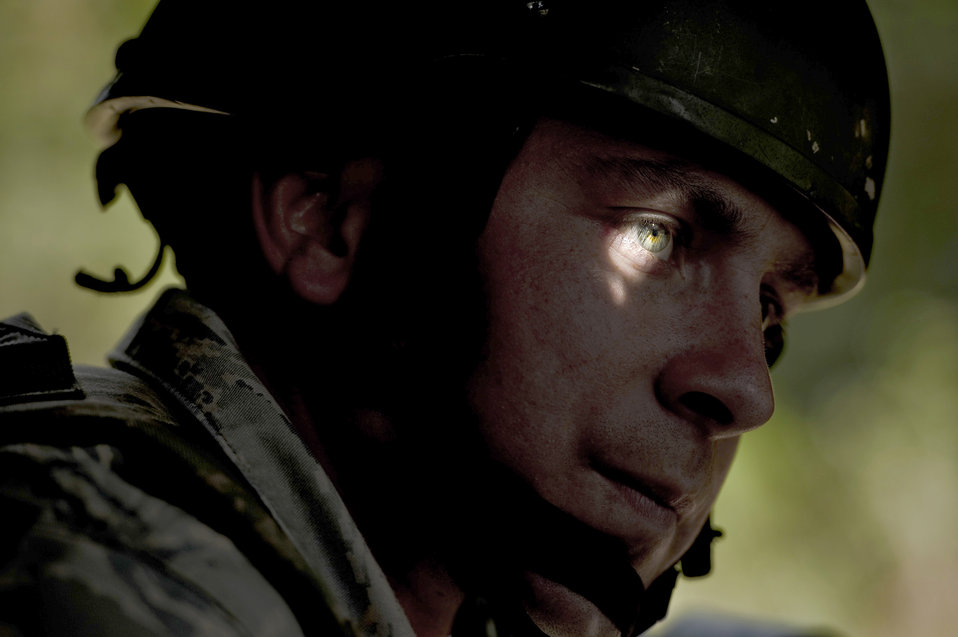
Keeping an eye on the road

Senior Airman Daniel Horning rides in the lead Humvee during a convoy training operation Nov. 10, 2010, at Camp Bullis, Texas. The Airmen attending the Combat Leadership Course gain experience from classroom and field training in convoy operations, mounted and dismounted patrols and urban warfare.